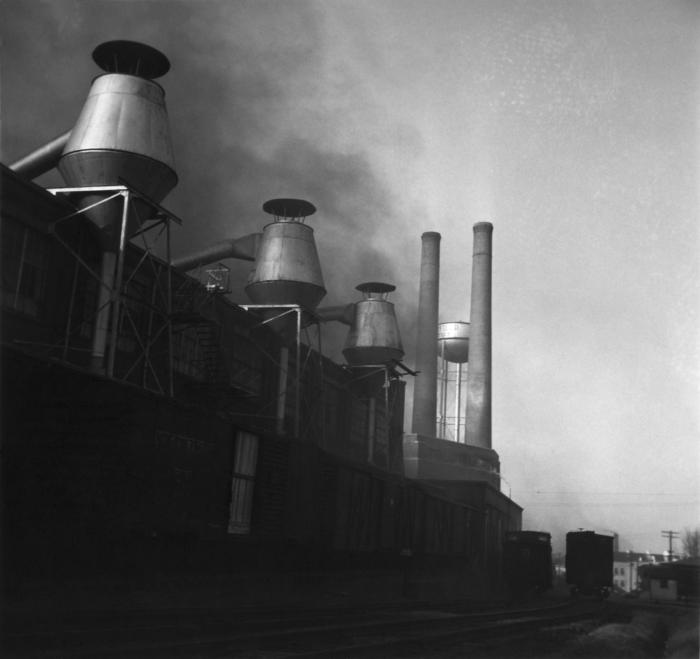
Provided by the Center for Disease Control's (CDC), National Institute for Occupational Safety and Health (NIOSH), this historic 1943 image depicted a number of industrial smoke stacks located alongside a North Carolina railroad. Note the pollutants being released into the atmosphere, which today, are more stringently regulated through the implementation of technologic advancements, thereby, reducing the toxification of the environment on a global scale.